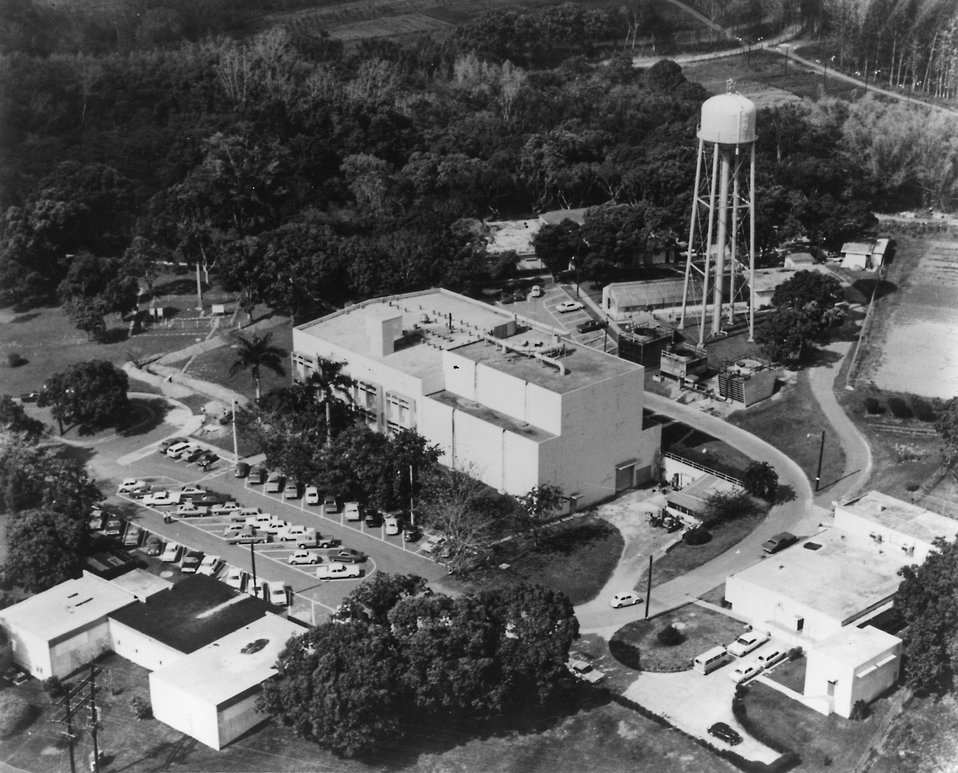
Puerto Rice Nuclear Center... Aerial view of the Puerto Rico Nuclear Center at Moyaguez which has facilities for instruction in nuclear science and engineering, chemistry and health physics. Circa 1972.